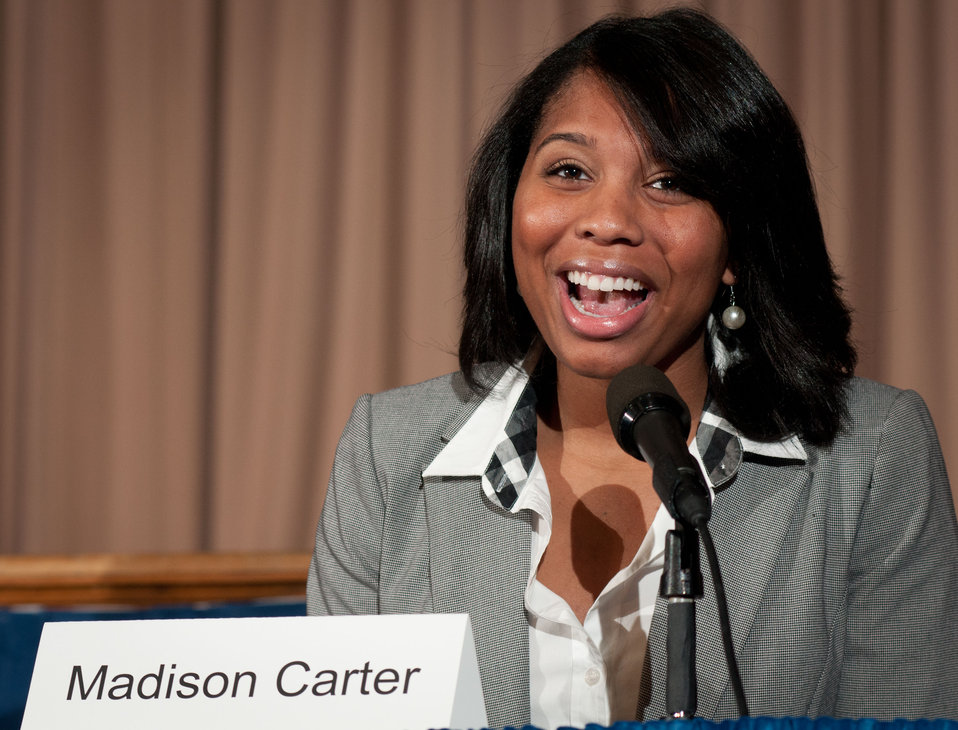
United States Department of Agriculture (USDA) Food Safety and Inspection Service Meditation and Life/Work Services Division Program Support Assistant Madison Carter, participated in the panel discussion during the Work Force Recruitment Program’s (WRP) “Your Key To Hiring Student Interns and Employees with Disabilities” event hosted by the United States Department of Agriculture (USDA) and held in the Jefferson Auditorium, in Washington, D.C. on Tuesday, February 7, 2012.